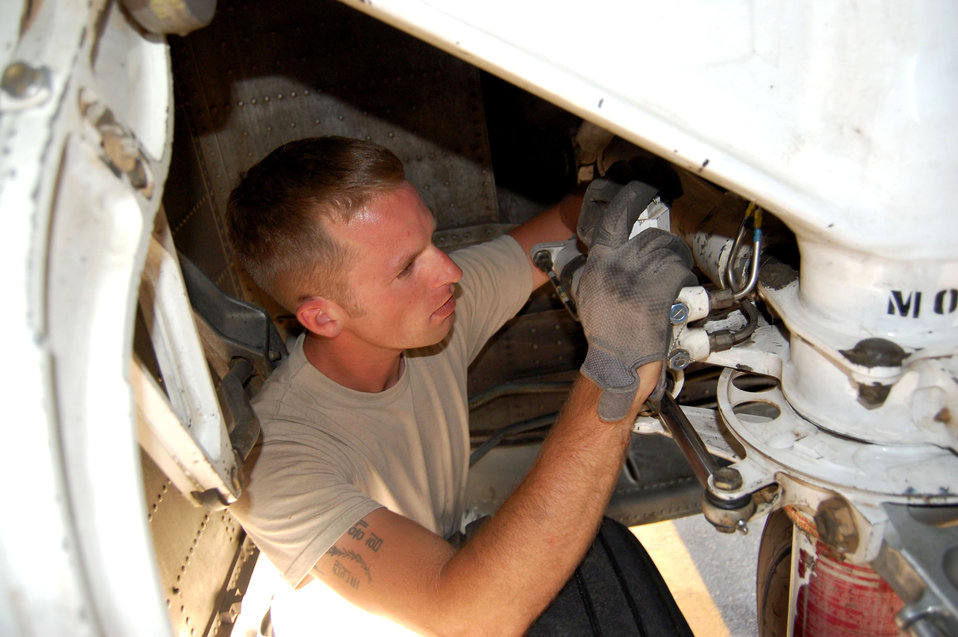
Aging C-130s: the geriatric fleet

Staff Sgt. Andrew Baker inspects a nose wheel steering actuator Oct. 30 in Southwest Asia. Assigned to the 386th Expeditionary Aircraft Maintenance Squadron, Sergeant Baker is the crew chief for a C-130 known a